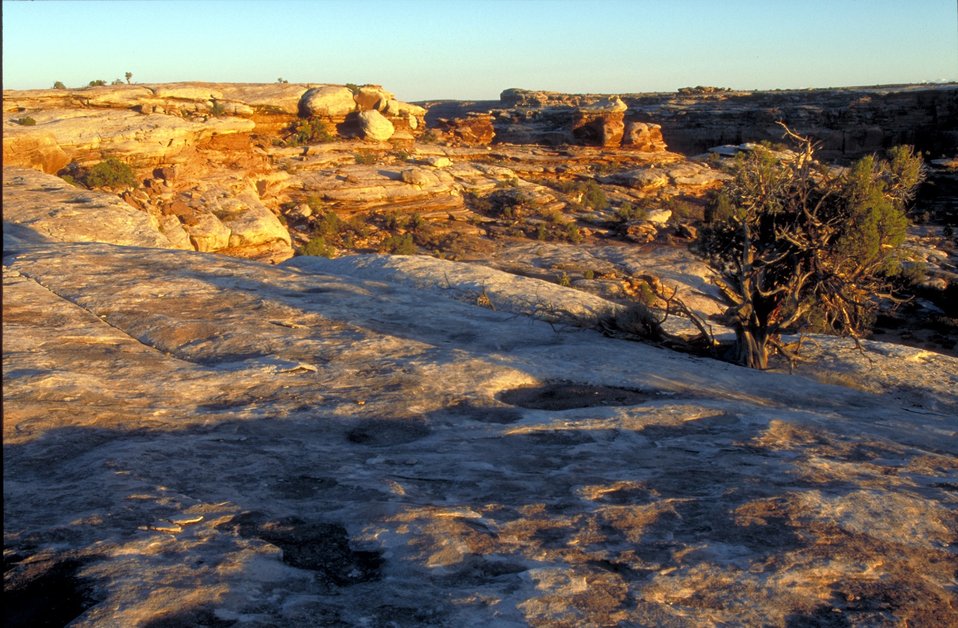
Spring Canyon point area near Green River.